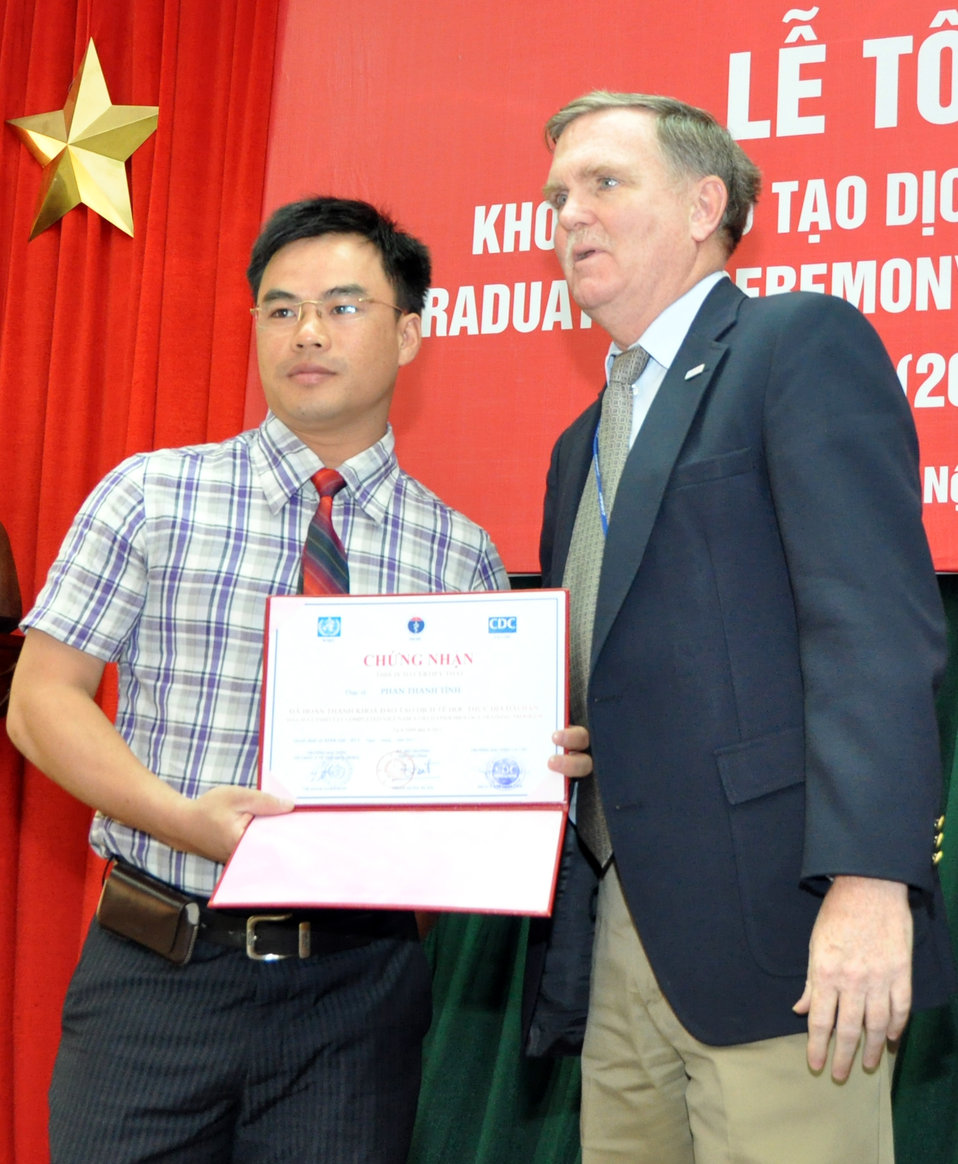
Field Epidemiology Training Program Graduation

The first five fellows graduated today from Vietnam's Field Epidemiology Training Program, a U.S.-supported initiative that provides public health workers with skills to rapidly identify, investigate, and respond to disease outbreaks.

The Field Epidemiology Training Program (FETP) was established by Vietnam's Ministry of Health in 2008 with funding and technical support from the U.S. Agency for International Development (USAID), the U.S. Centers for Disease Control and Prevention, the Joint U.N. Program, and the World Health Organization.